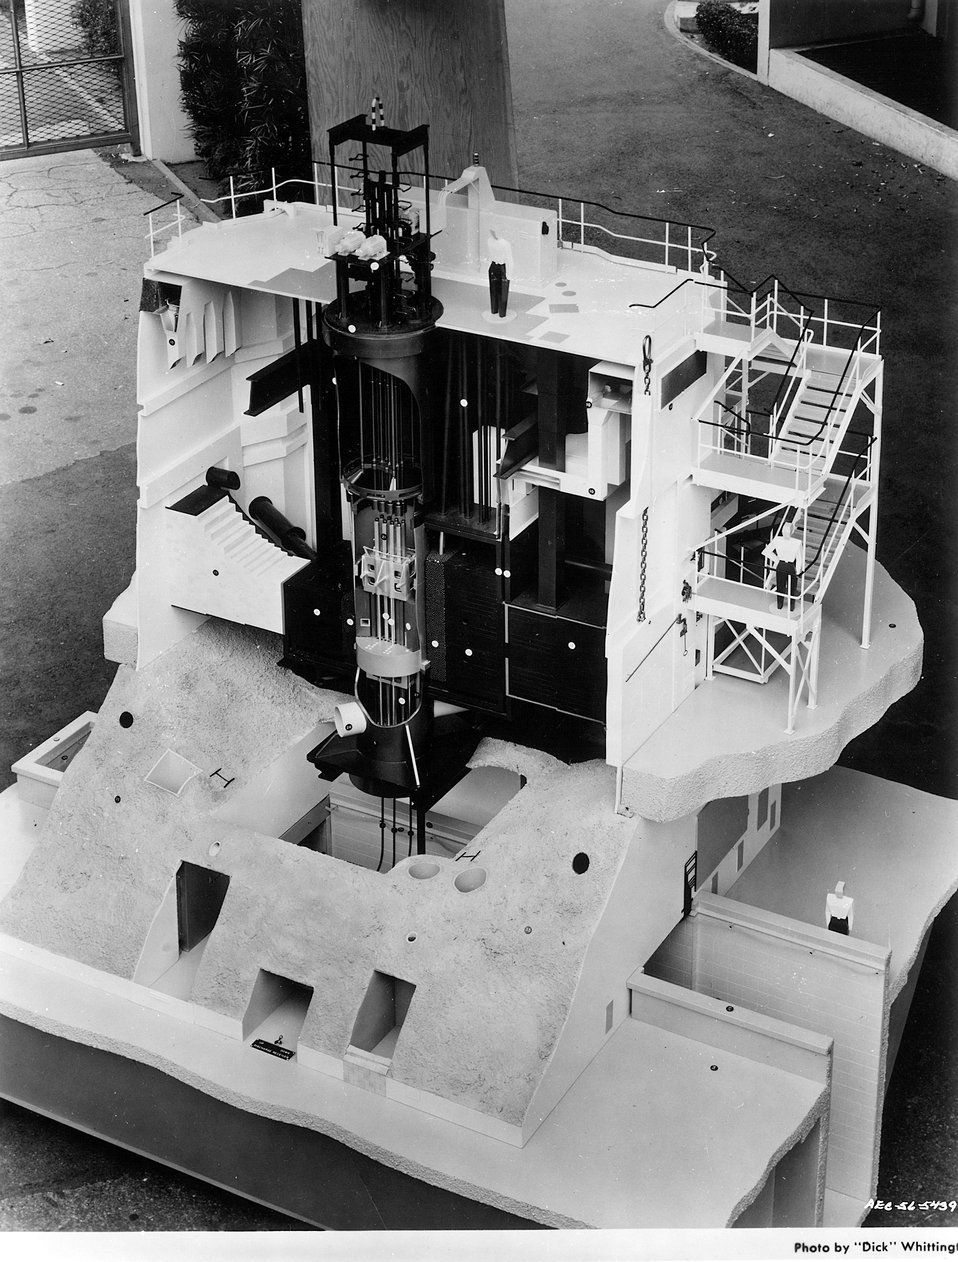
Model of the Materials Testing Reactor at the National Reactor Testing Site, Idaho. Circa 1956.